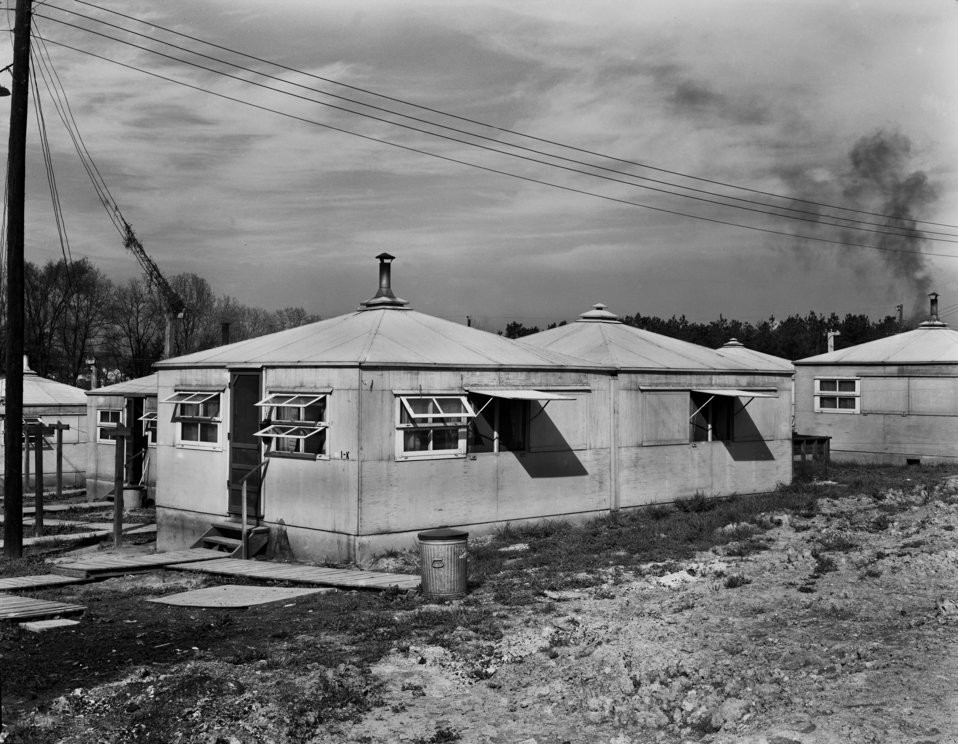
Victory Hutments Oak Ridge 1948

5317 DOE photo Ed Westcott 12-1948 Oak Ridge Tennessee